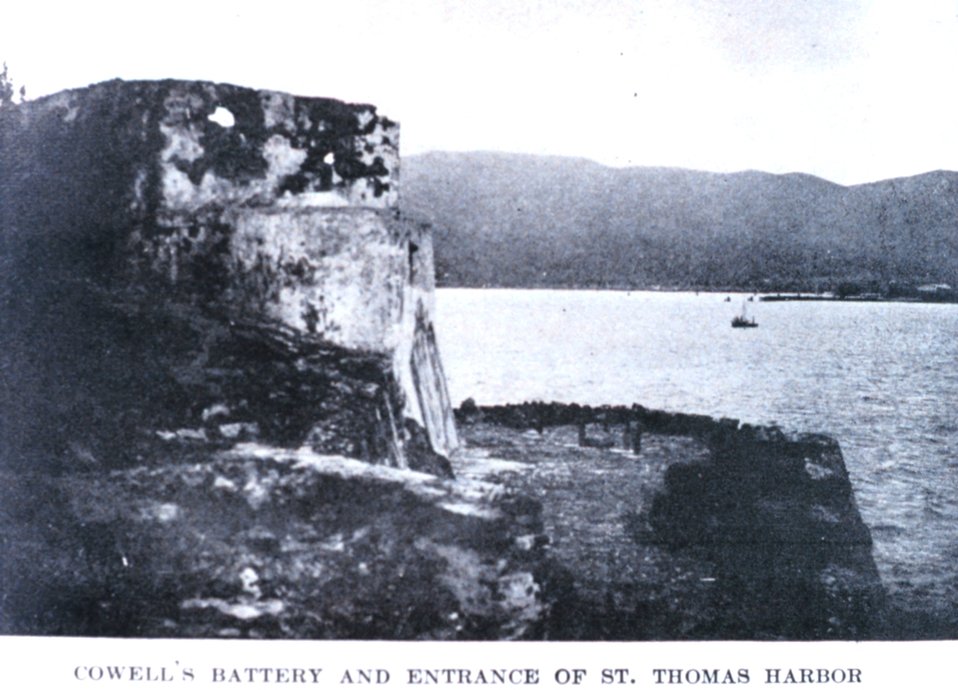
'Cowell's Battery and Entrance of St. Thomas Harbor.' 'The Virgin Islands Our New Possessions and the British Islands', by Theodoor De Booy and John T. Faris, 1918. J. B. Lippincott and Company, Philadelphia. P. 30. Library Call Number C/hc100 V81 B.